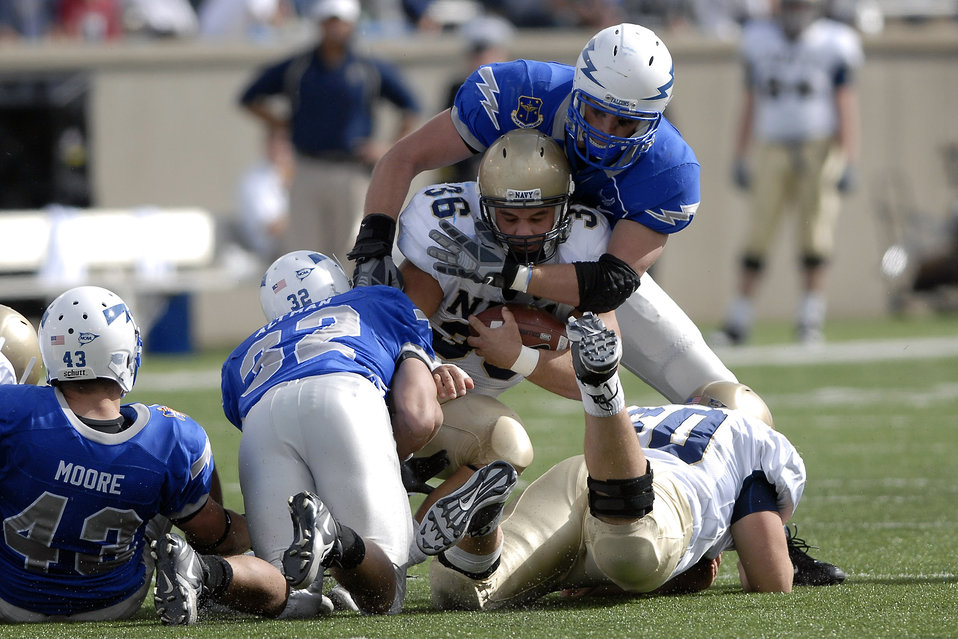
Football: Navy holds off Falcons

Navy fullback Eric Kettani is tackled during second quarter action as Navy defeated the Falcons 33-27 at the Academy in Colorado. Air Force came up short Oct. 4 in their quest to reclaim the Commander-in-Chief's trophy.